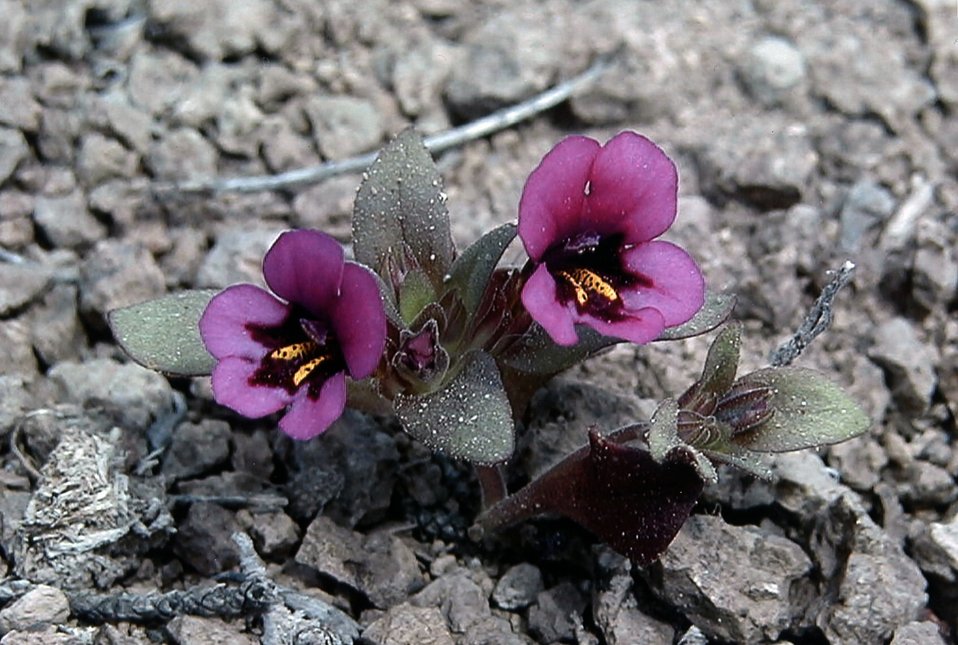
Dwarf monkey flower, Mimulus nanus. Cougar Butte Kate Peterson, Prineville Botany HM